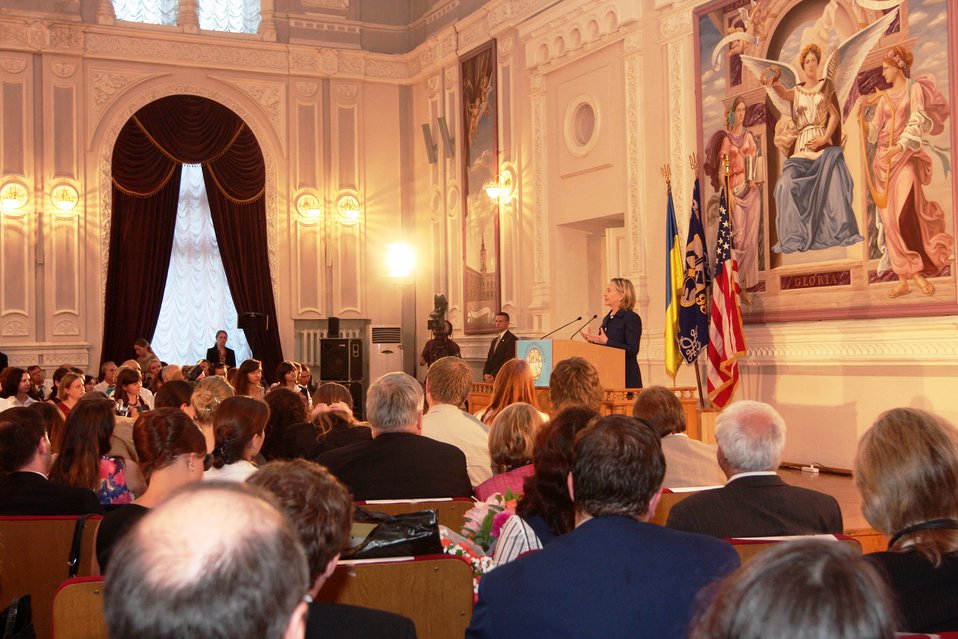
Secretary Clinton Addresses Kyiv Polytechnic Institute Town Hall

U.S. Secretary of State Hillary Rodham Clinton responds to students’ questions at Kyiv Polytechnic Institute in Kyiv, Ukraine, on July 2, 2010.